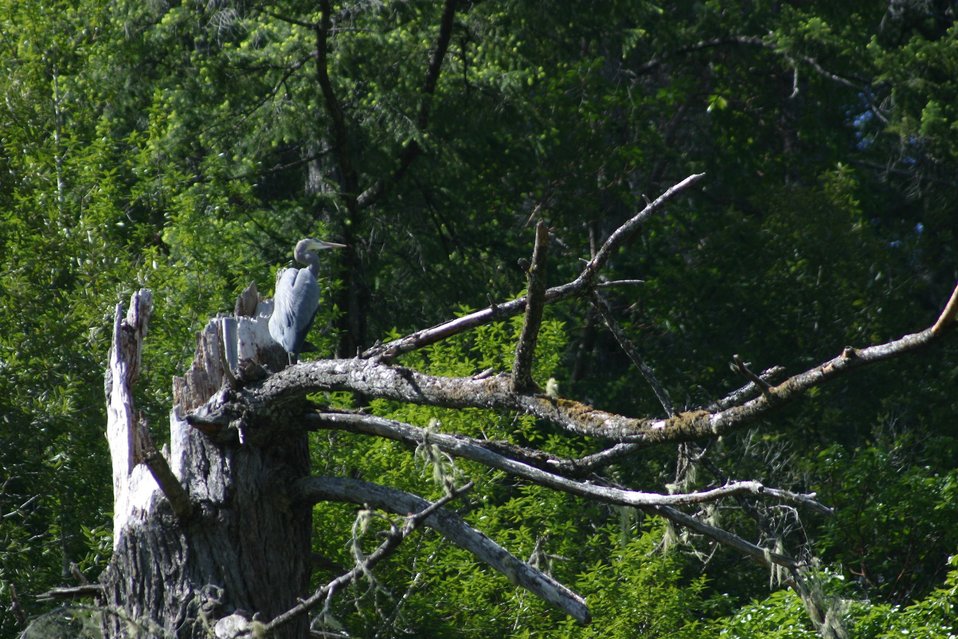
Wild section of the Rogue River from Grave Creek to Foster Bar May 19 to May 22.